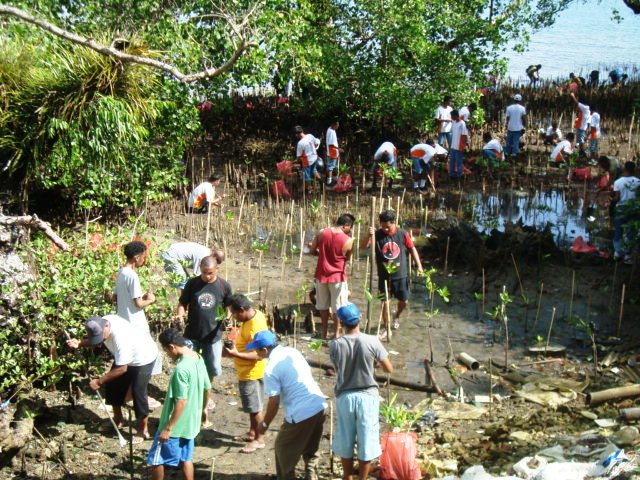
PP 2010 Volunteers Join Indonesians To Replace Mangrove Trees

Pacific Partnership 2010 volunteers join Indonesians to replace hundreds of mangrove trees along the coast of Ambon Island in the Banda Sea, Eastern Indonesia on July 29, 2010. The USNS MERCY/PP10 is participating with ships from Indonesia, Australia and Singapore in the local SAIL BANDA activities, dedicated to improving the future of small islands and promoting awareness of the importance of preserving and caring for coral reefs and wetlands.